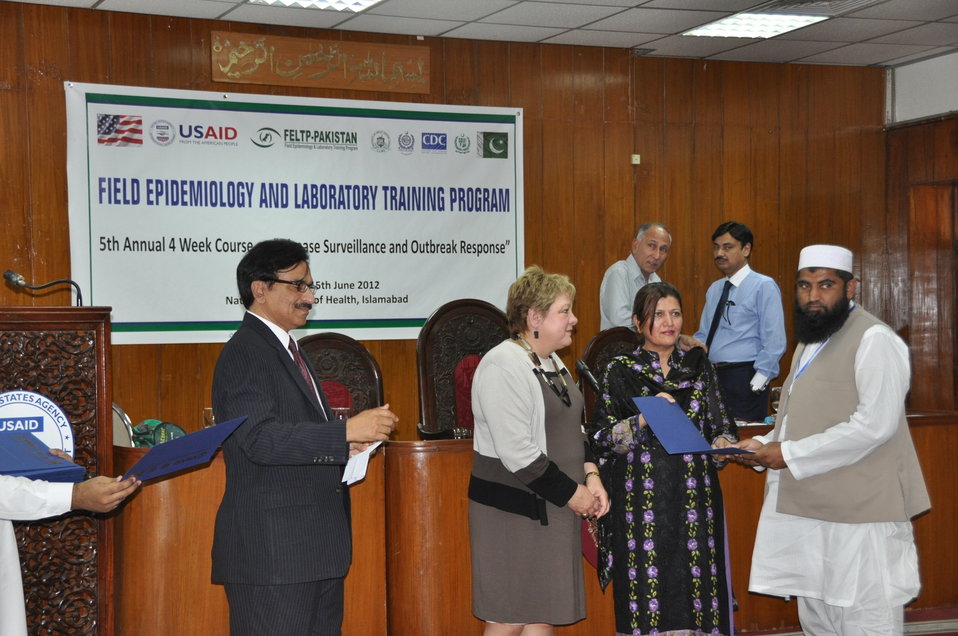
Field Epidemology and Laboratory Training Program